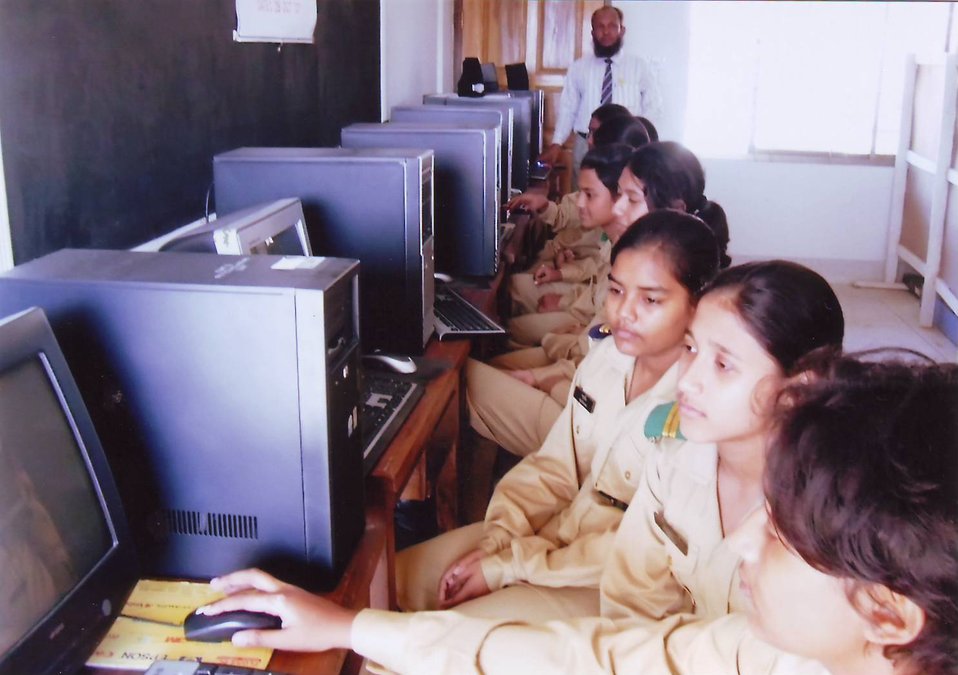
cadets at computer lab